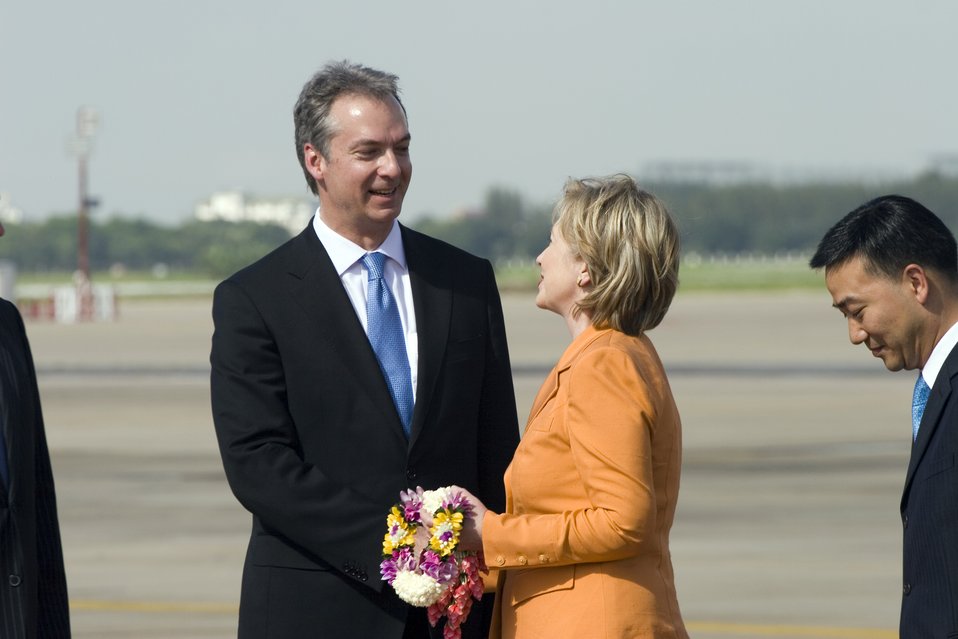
Secretary Clinton Arrives at Bangkok, Thailand

U.S. Secretary of State Hillary Rodham Clinton is greeted by U.S. Ambassador to Thailand Eric G. John upon her arrival to Bangkok, Thailand July 21, 2009.